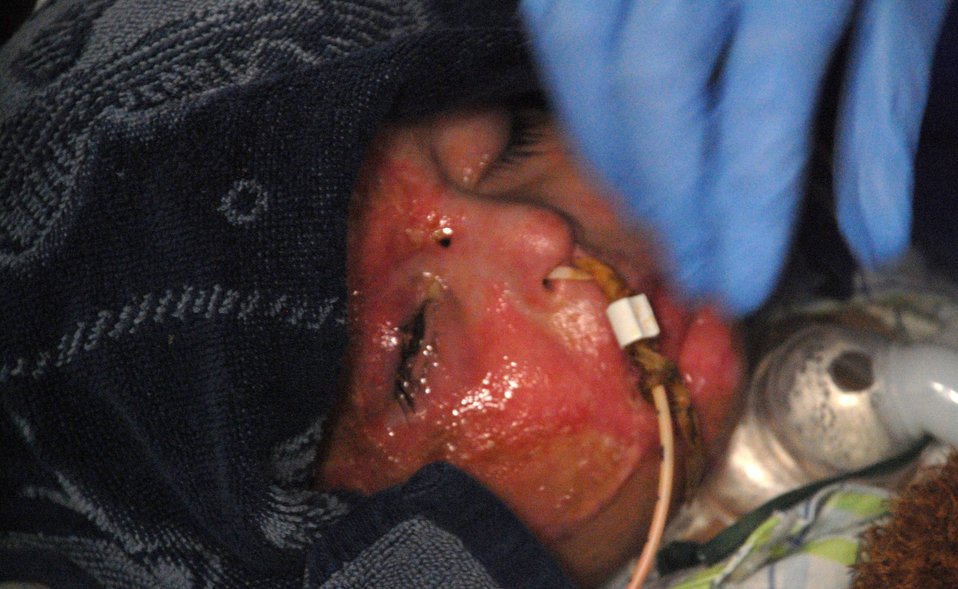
Little, but strong: Burned Iraqi child overcomes odds

An Iraqi boy, badly burned about the head, face, chest, abdomen and legs receives care on board a C-17 Globemaster III at Ramstein Air Base, Germany, that is getting ready to depart. The boy is on his way to a children't hospital in Cincinnati with a stop over at Andrews Air Force Base, Md.